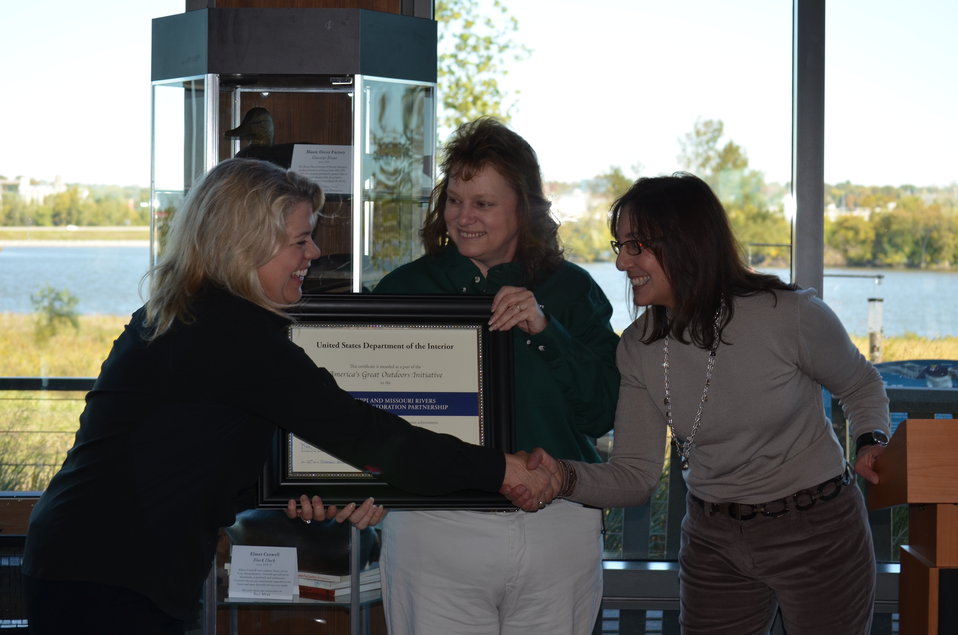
MO Dept. of Nat. Resources honored

Sara Parker Pauley (left), Director of Missouri Department of Natural Resources, receives award from Department of Interior's Acting Asst. Secretary Rachel Jacobson (right) and USFWS State Private Lands Coordinator Kelly Srigley-Werner (center). Through land acquisition, the Missouri Department of Natural Resources secured the historic point where two of the nation's mightiest rivers merge. USFWS/Ashley Spratt